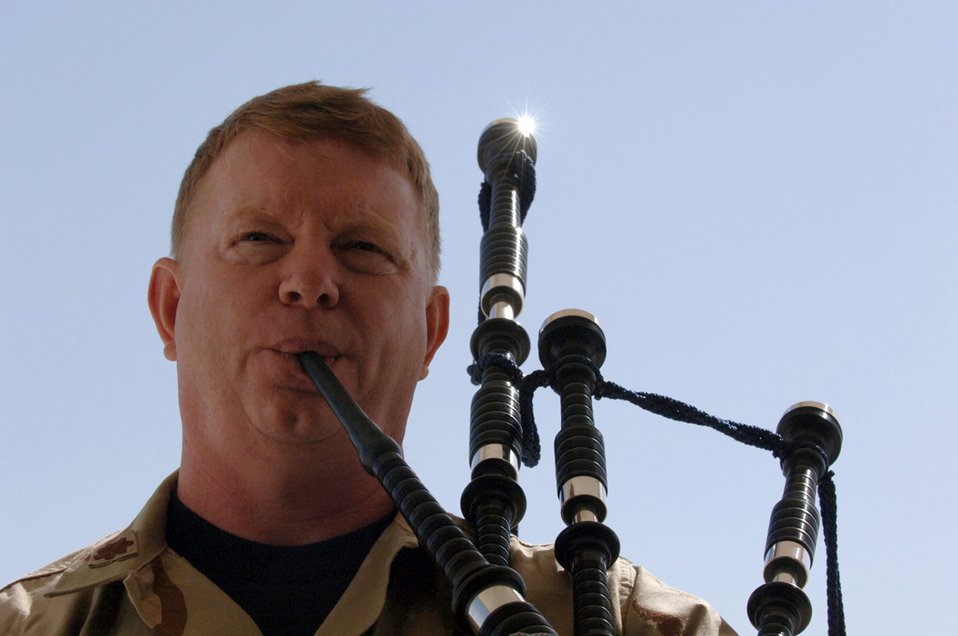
Final salute

SOUTHWEST ASIA (AFPN) -- Chaplain (Maj.) Michael Gilbert plays bagpipes during a memorial service here Jan. 26 held in honor of two Elmendorf Air Force Base, Alaska, security forces Airmen killed in action. Major Gilbert is the chaplain for the 379th Air Expeditionary Wing.